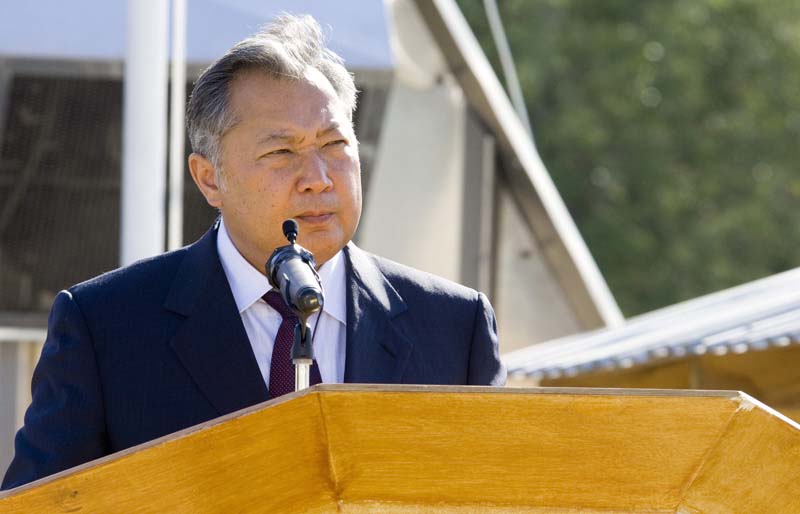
Manas Air Base hosts Kyrgyz president

Kurmanbek Bakiev, the president of Kyrgyzstan, delivers the keynote speech during a remembrance ceremony held at Manas Air Base, Kyrgyzstan, Sept. 11. The ceremony marked the first time the president visited the base.